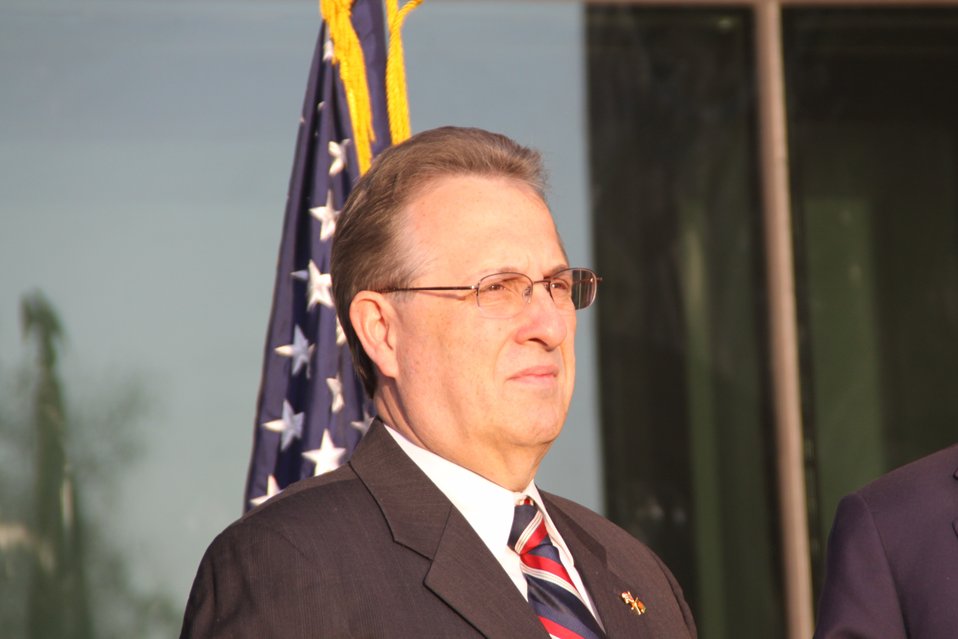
Ambassador Wayne